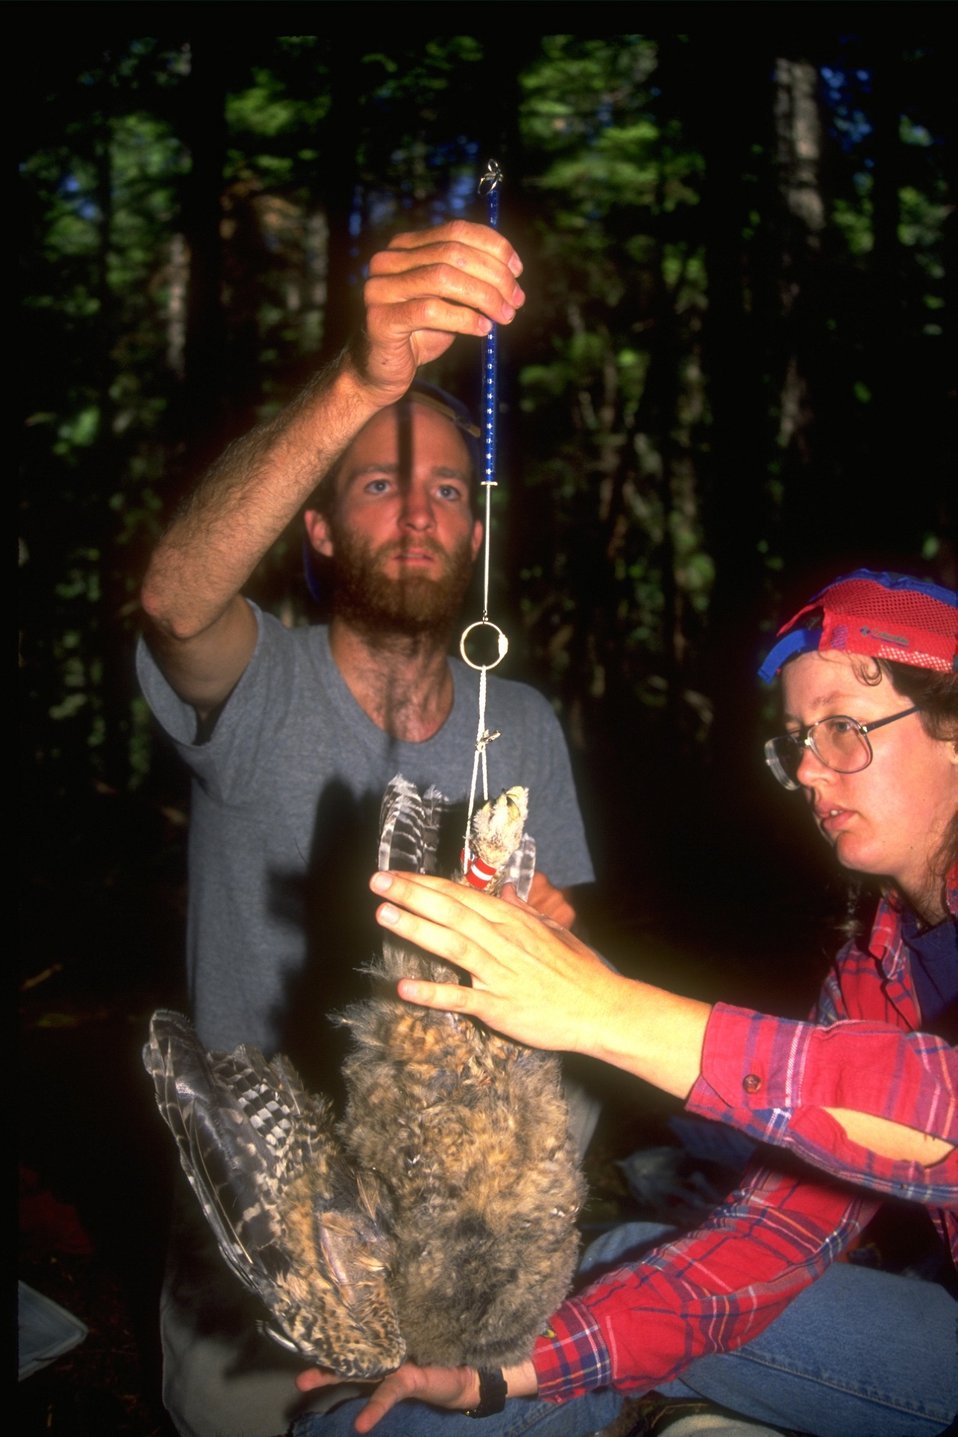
Weighing a Northern Spotted Owl.